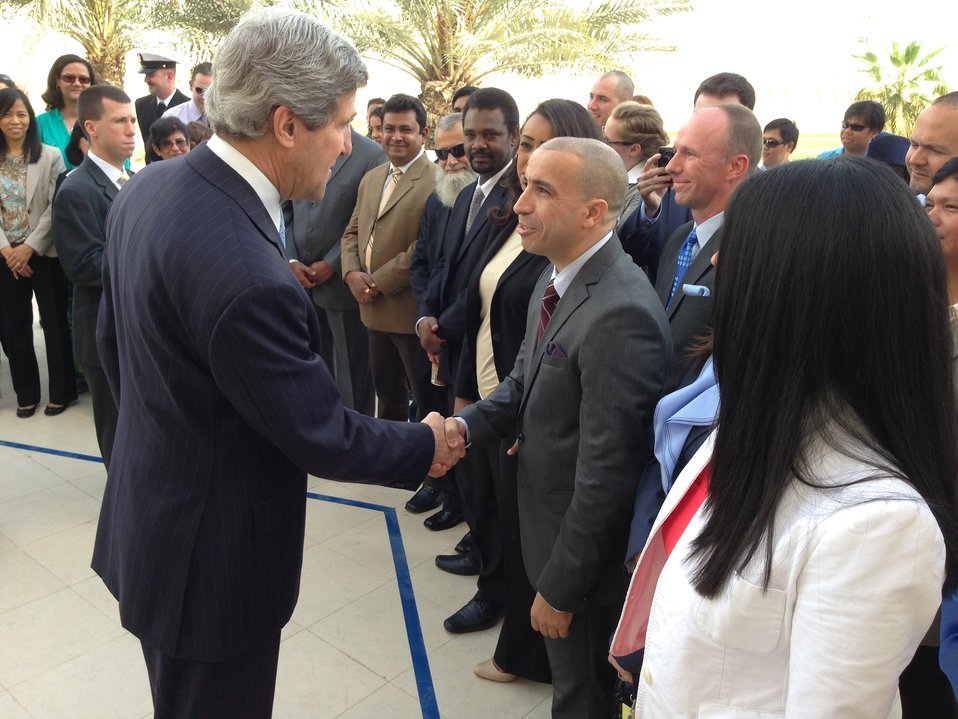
Secretary Shakes Hands With Embassy Doha Staff

U.S. Secretary of State John Kerry shakes hands with staff of the U.S. Embassy in Doha, Qatar, on March 6, 2013.